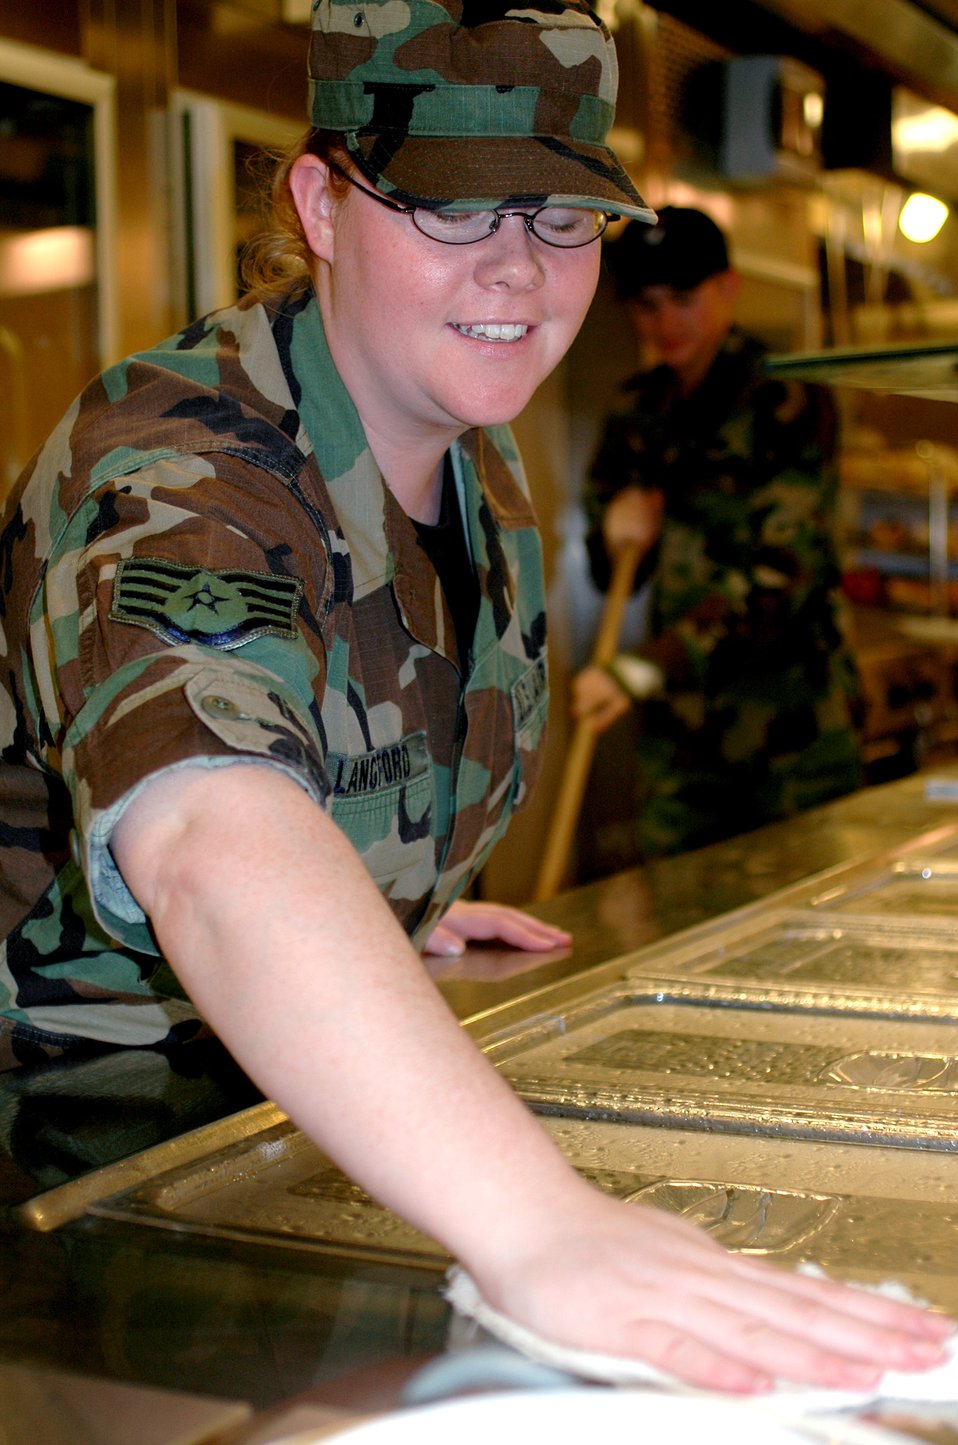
Serving Airmen

Staff Sgt. Crystal Langford cleans the dining facility serving area before loading the bins with food Jan. 23 at the La Dolce Vita Dining Facility on Aviano Air Base, Italy. Sergeant Langford is a 120th Fighter Wing food service craftsman from Great Falls, Mont. Five members of the Air National Guard from the 120th FW are working in the La Dolce Vita as part of their annual two-week duty.